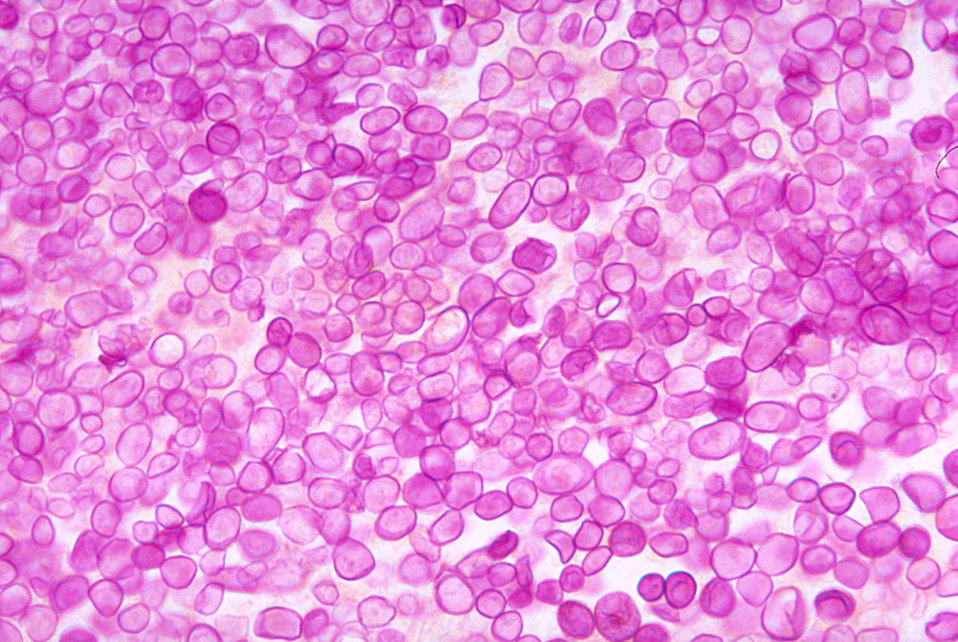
This photomicrograph depicts the histopathology associated with protothecosis in a dog due to Prototheca zopfii.